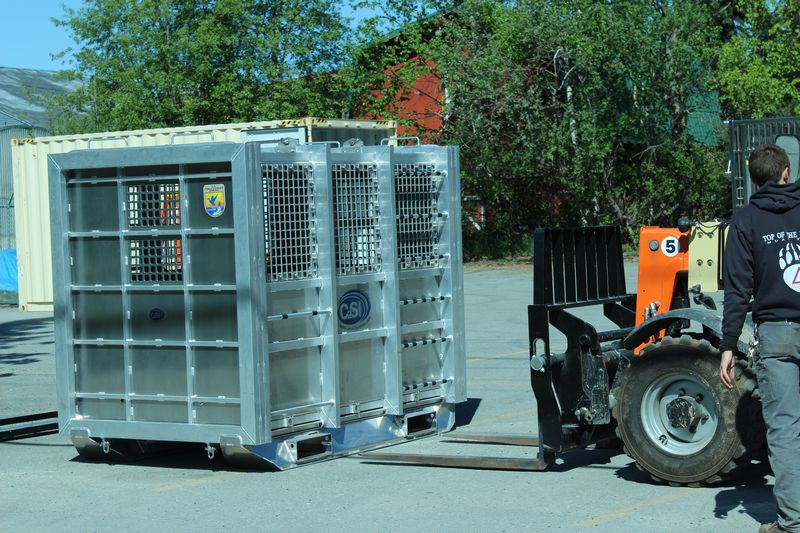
Press Conference on the polar bear holding module. USFWS/Rose Primmer